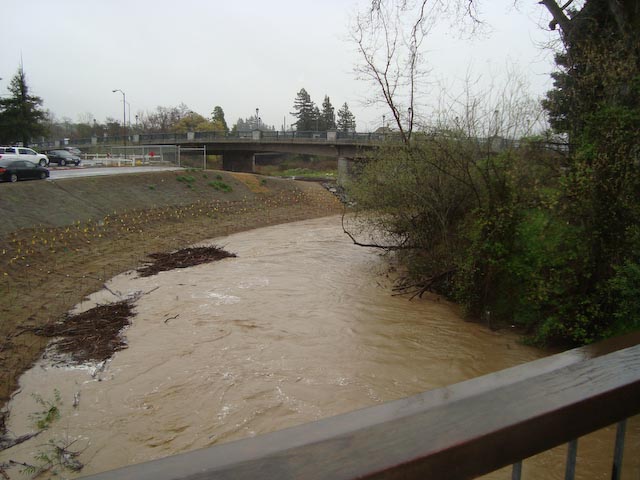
Napa rain storm tests new flood project

Water flows around the final bend of Napa Creek before pouring into the Napa River in Napa, Calif., March 14, 2012, covering tree stumps placed along the banks to provide fish with natural habitat. The U.S. Army Corps of Engineers Sacramento District placed the stumps as part of the Napa Creek Project to reduce flood risk in downtown Napa. The district also widened the creek channel and built box culverts to reroute flood waters out of the creek and directly into the Napa River, reducing the chance of flooding to nearby neighborhoods. The $14.8 million American Recovery and Reinvestment Act of 2009-funded Napa Creek Project is a joint effort of the Sacramento District, the city of Napa, and the Napa Flood Control and Water Conservation District.